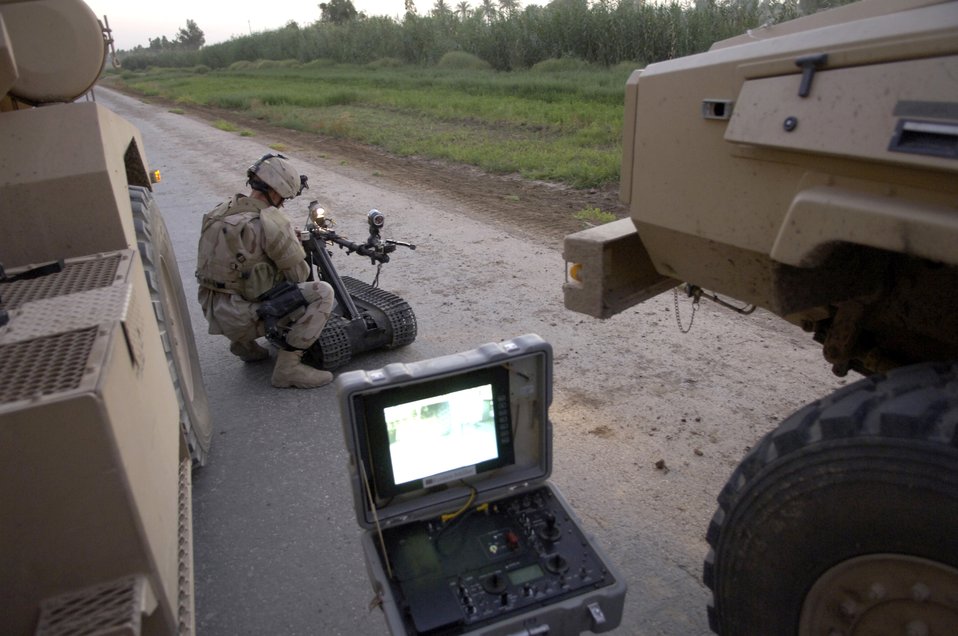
Remote control

Senior Airman Scott White prepares a Talon robot before sending it to inspect a possible improvised explosive device, or IED, at a location southwest of Baghdad, Iraq, on Wednesday, June 28. The IED was found by an Army infantry unit. Airman White and two other explosive ordnance technicians were called to the scene to clear the area. Airman White is with the 447th Expeditionary Civil Engineer Squadron, and is deployed from Nellis Air Force Base, Nev.